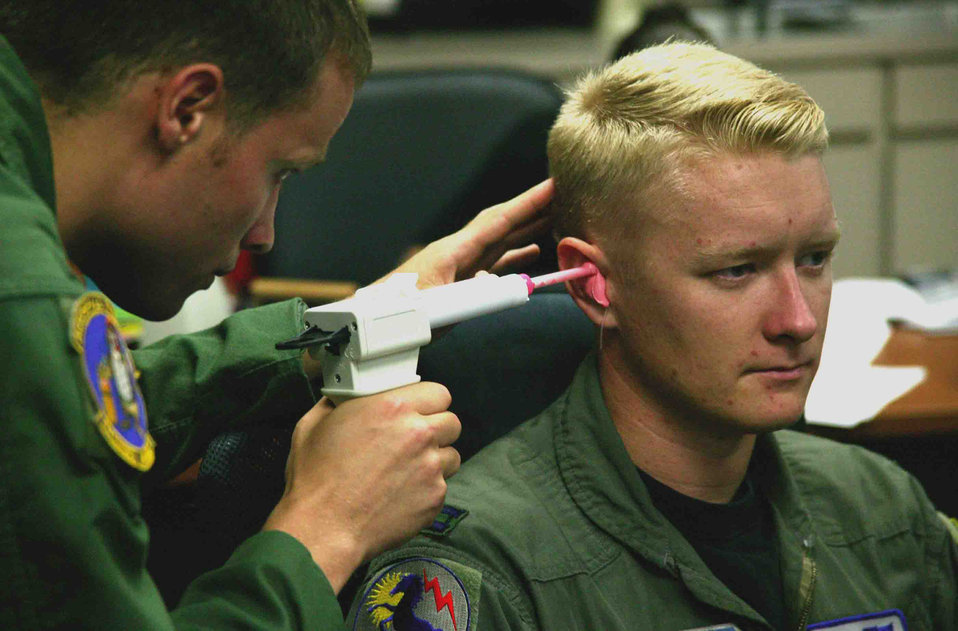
Shaw pilots hear better with new earpiece

2nd Lt. Chris Reichlen (left) inserts silicone based mixture into the ear of Capt. Jerad Hand to make an inner-ear mold for the Attenuating Custom Communications Earpiece System Sept. 14 at Shaw Air Force Base, S.C. The ACCES device will significantly reduce surrounding ambient noise that pilots hear in the cockpit and increase the efficiency of radio communications. Lieutenant Reichlen is a 20th Aerospace Medicine Squadron aerospace physiologist, and Captain Hand is a 79th Fighter Squadron F-16 Fighting Falcon pilot.